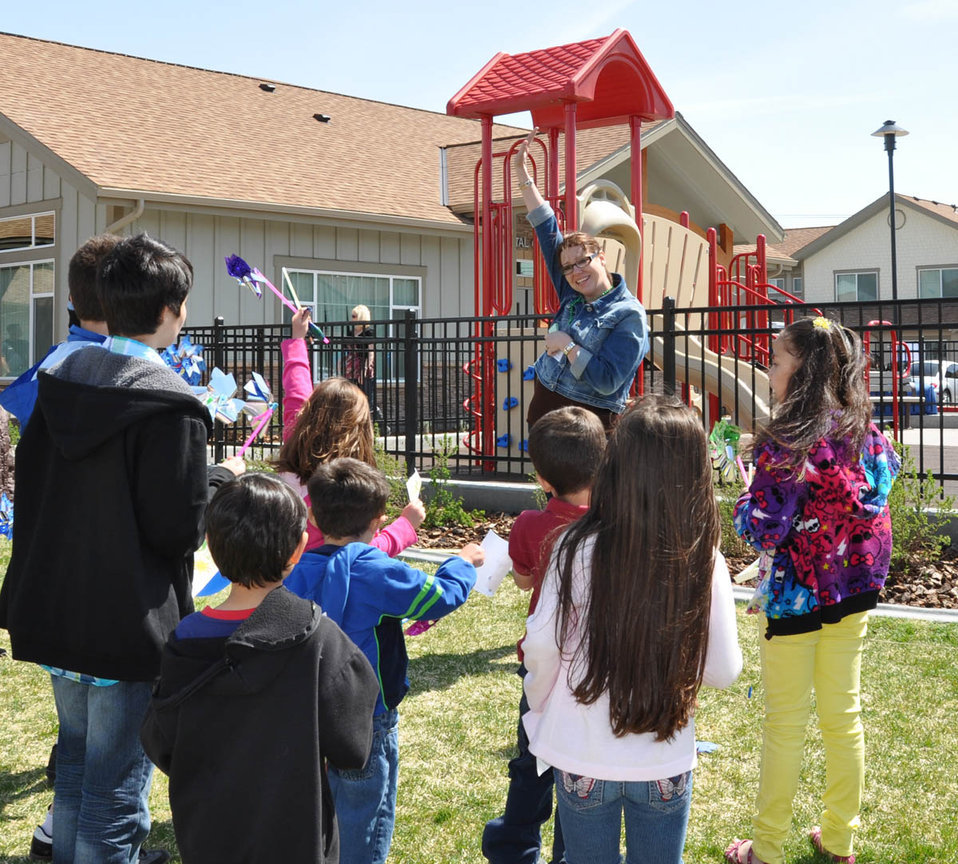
Robinson kids 2

At the U.S. Department of Agriculture (USDA) Earth Day outdoor classroom in Boardman, OR last month, USDA program technician Renee Robinson tests the children on what they’ve learned about saving energy at home.